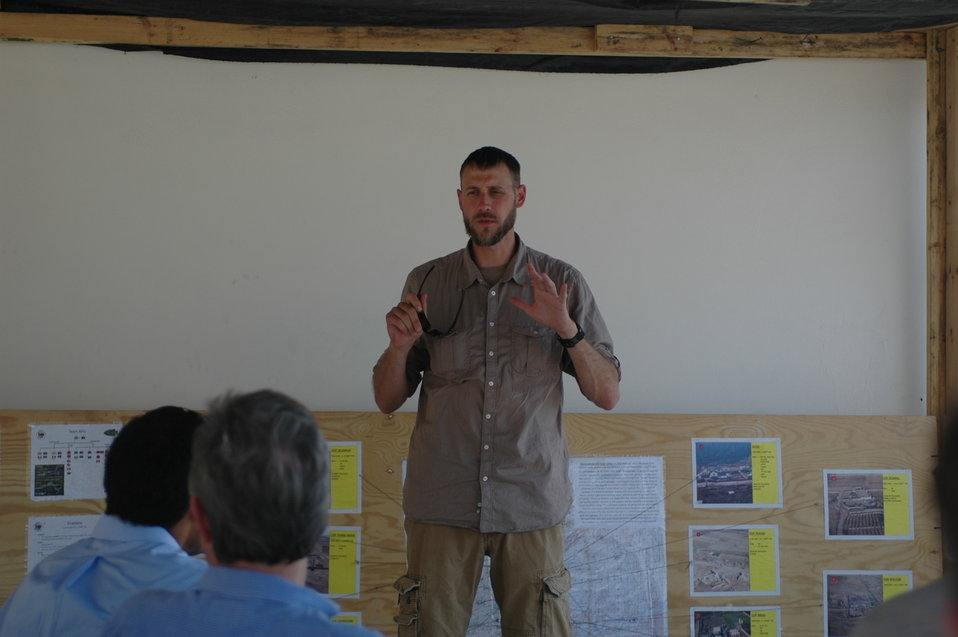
Dr Shah Visits Kandahar April 9, 2010